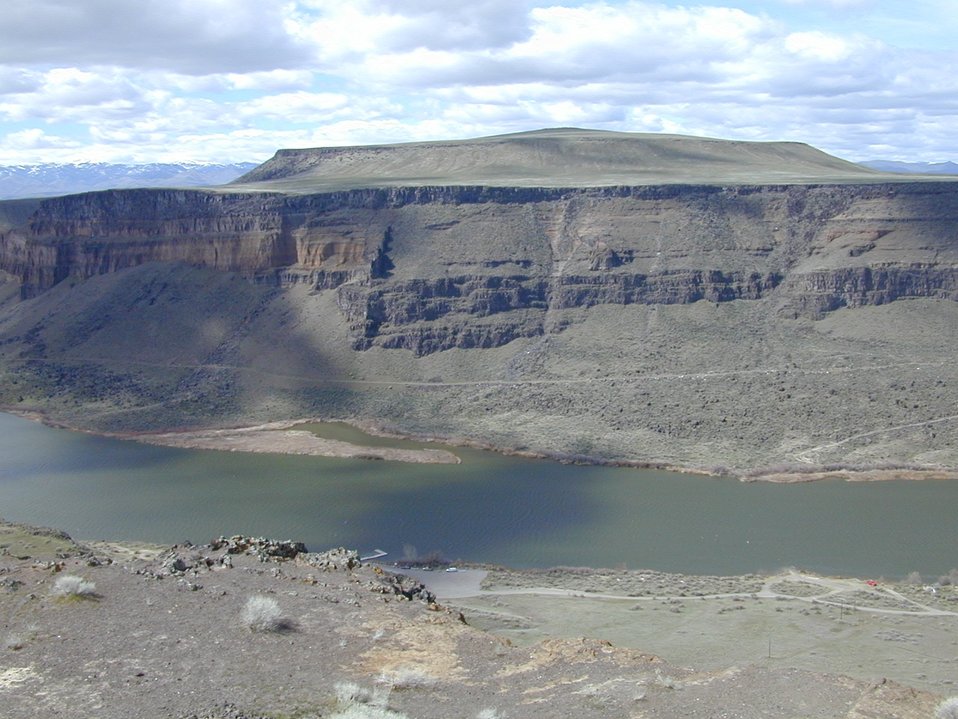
Scenic Snake River Birds of Prey National Conservation Area Lower Snake River District LSRD Snake River Canyon